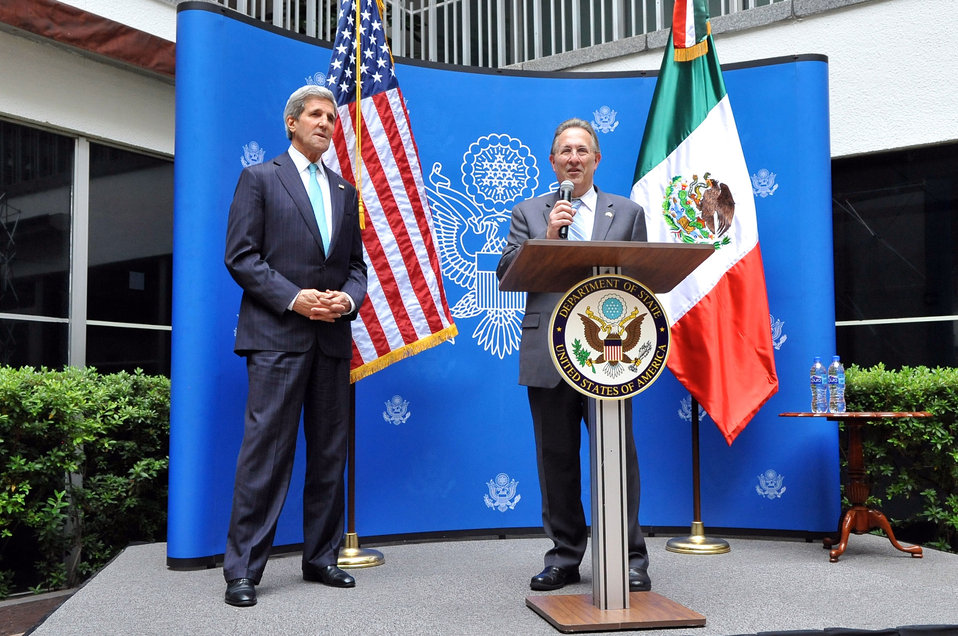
Ambassador Wayne Introduces Secretary Kerry at Embassy Mexico City Meet-and-Greet

U.S. Ambassador to Mexico Anthony Wayne introduces U.S. Secretary of State John Kerry to the family and employees of U.S. Embassy Mexico City during a meet-and-greet in Mexico on May 21, 2014.